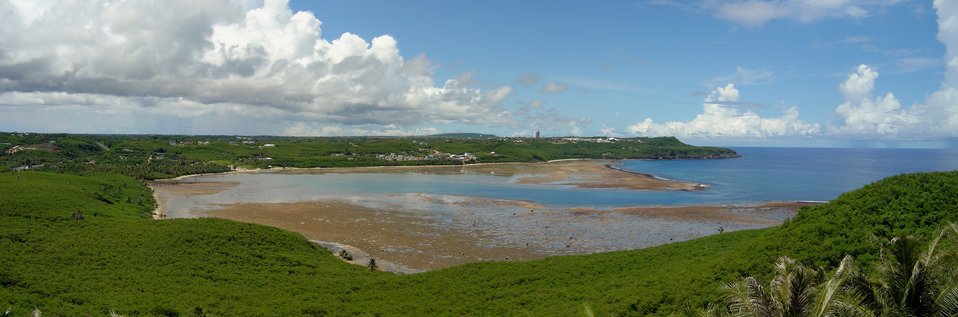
Pago Bay panorama, Guam coastline.